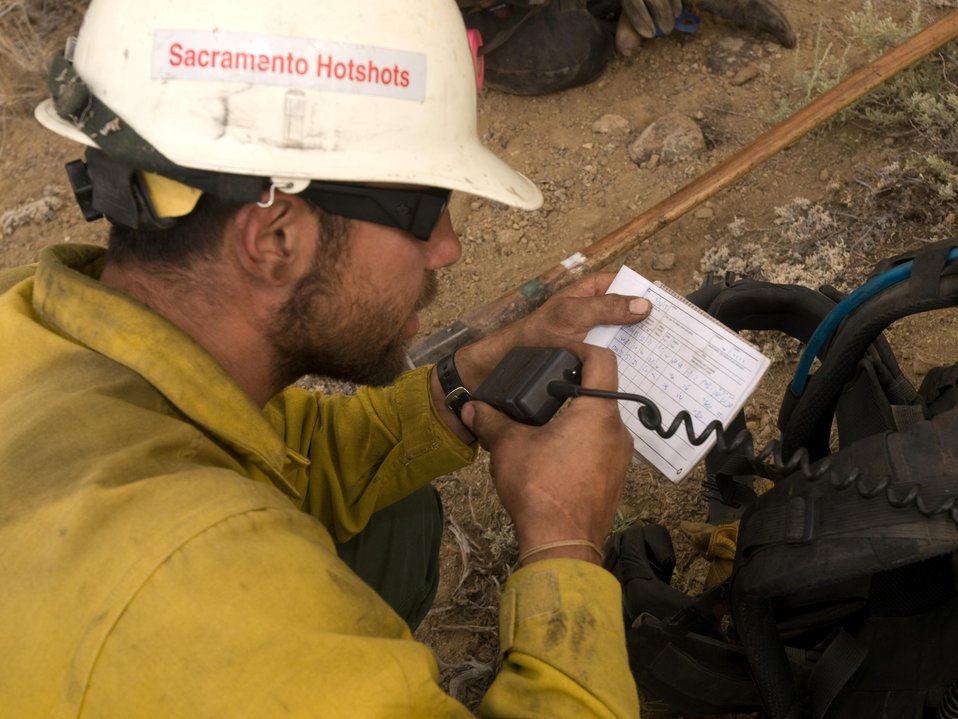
Firefighter reports on weather conditions to dispatch about the Lodgepole Fire. The Lodgepole Fire in the Salmon-Challis National Forest near Challis, ID began on Jul. 20, 2013 by lightning has consumed approximately 13,700 acres and is approximately 15% contained.